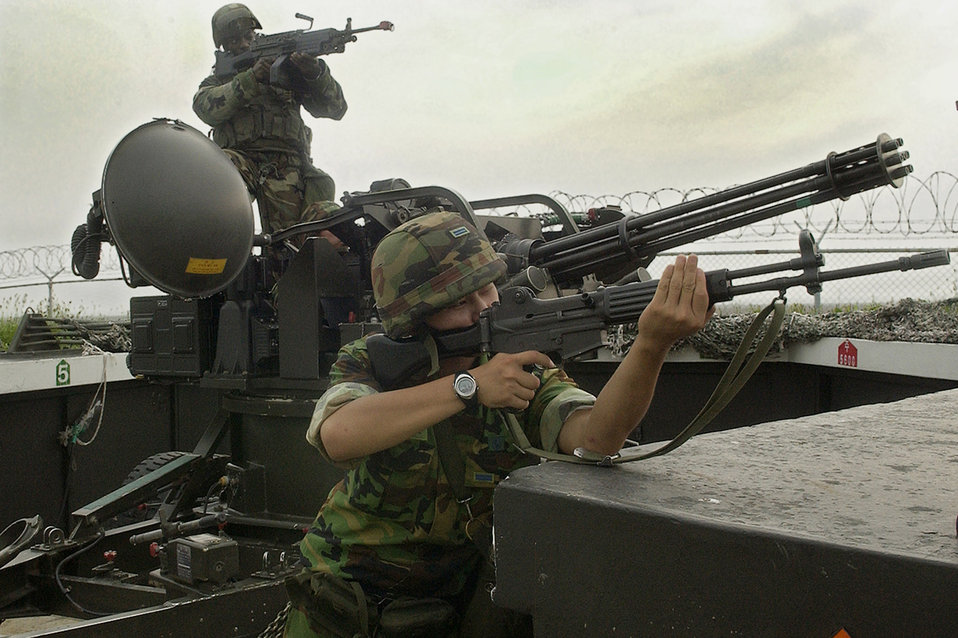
U.S., South Korean Airmen train on base defense plan

Senior Airman Escott Solomon and Republic of Korea Airman First Class Hyun, Jaehwan take a defensive posture at one of the base's Vulcan cannon batteries during a simulated air attack July 24 at Kunsan Air Base, Republic of Korea. Airman Hyun, 38th Fighter Group anti-aircraft battery, along with Airman Solomon and other Airmen of the 8th Security Forces Squadron, conducted joint training on the anti-aircraft system, enhancing the base's security in the event of hostilities on the peninsula.